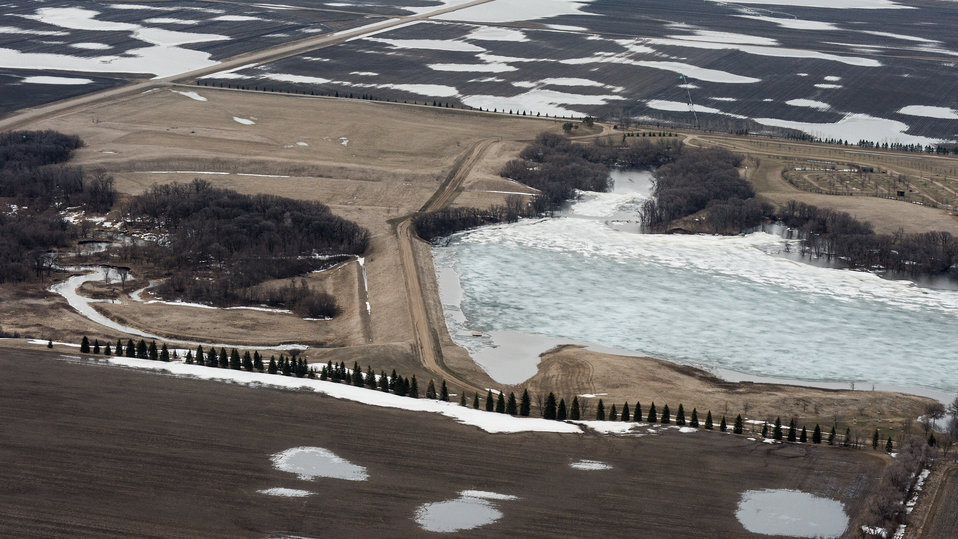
Fordville Dam in Grand Forks County, ND, part of the Red River basin, on Wednesday, May 1, 2013. To learn about the Red River Basin Initiative, see www.mn.nrcs.usda.gov/news/features13/RRBI.html.